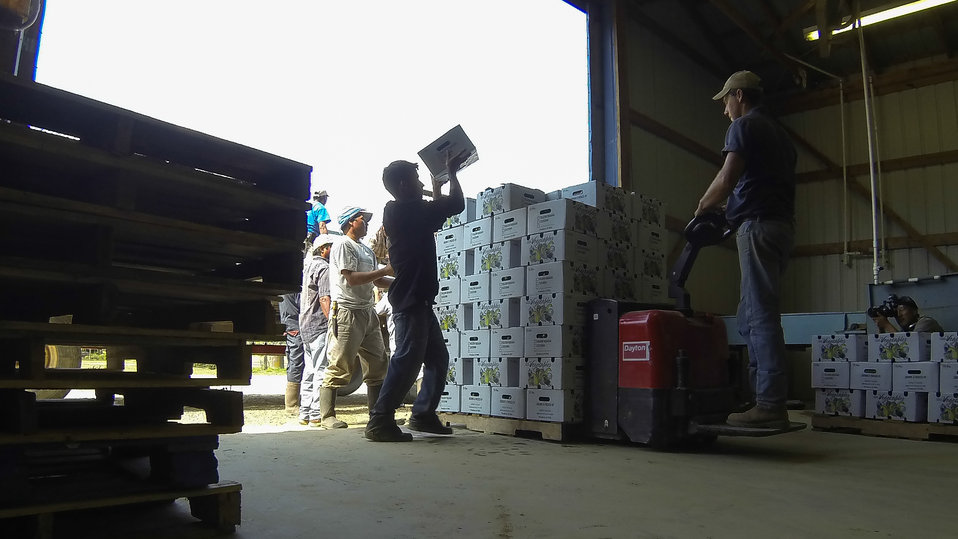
Fresh packed squash is transferred from processing trailer to pallets that will be loaded onto a waiting tractor-trailer rig for shipment at Kirby Farms in Mechanicsville, VA on Friday, Sept. 20, 2013. Kirby Farms devotes 200 acres of the farm to eggplant, spinach, beets, tomato, jalapeno peppers, melons and a variety of greens. Soybeans and small grain are grown on the remaining 300 acres. The fertile Virginia soil and their management practices, allows Kirby Farms to double and triple crop fields with rotational crop selection. Wholesalers, who buy from this farm, sell the produce to major supermarkets in the Mid-Atlantic region, from North Carolina to Maryland. Restaurants in the local area prepare and serve their harvest to patrons in the Greater Richmond, VA Region.